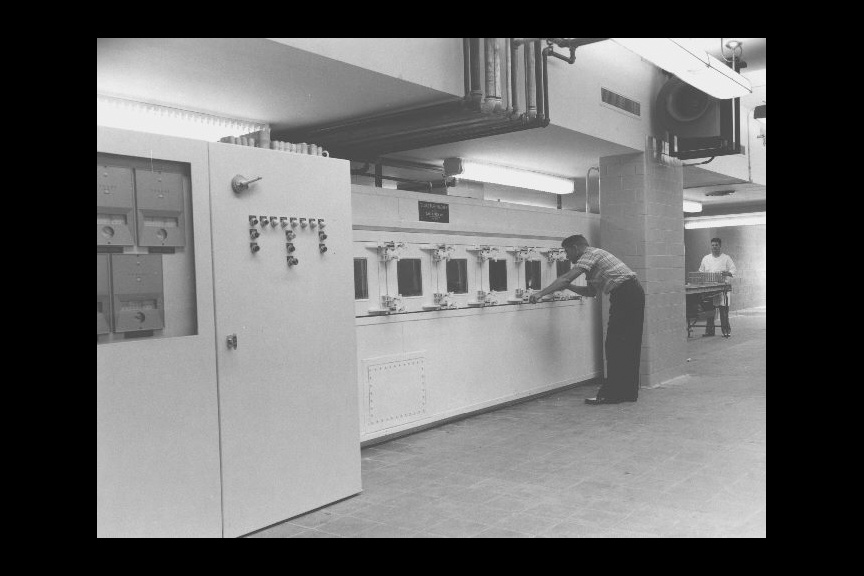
Employee adjusting controls on a Woodman Machine (glassware washer) at the Centers for Disease Control (CDC).